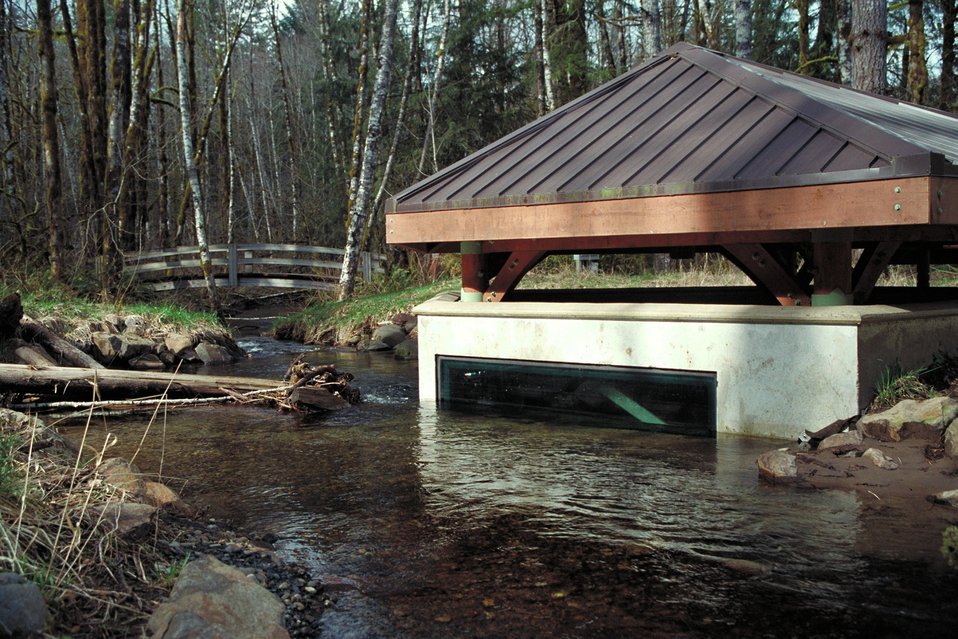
Cascade Stream Watch is an environmental education program conducted at BLM's Wildwood Recreation site.